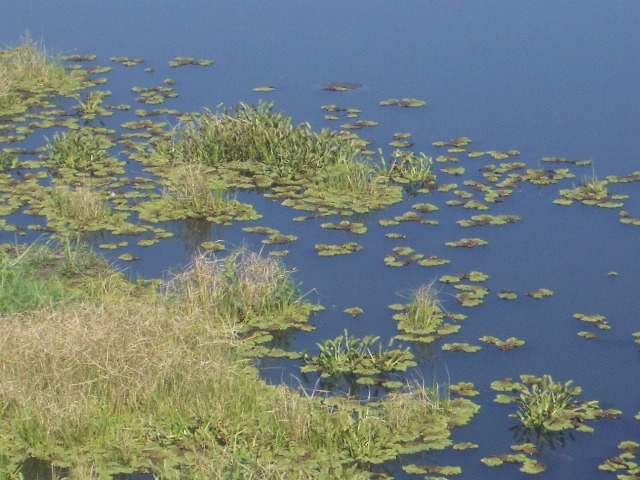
Uploaded by request of Snehasis Das

Taken at Loktak Lake, Manipur, India

We are siblings